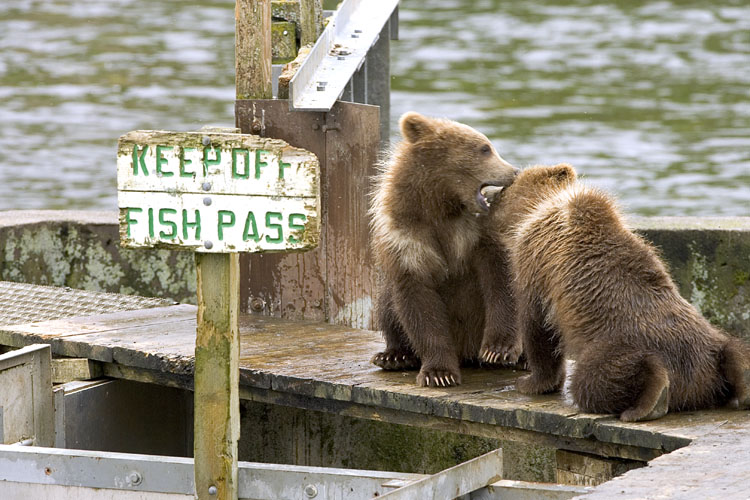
KOD Hildebrand (46)

Kodiak National Wildlife Refuge- Wildlife